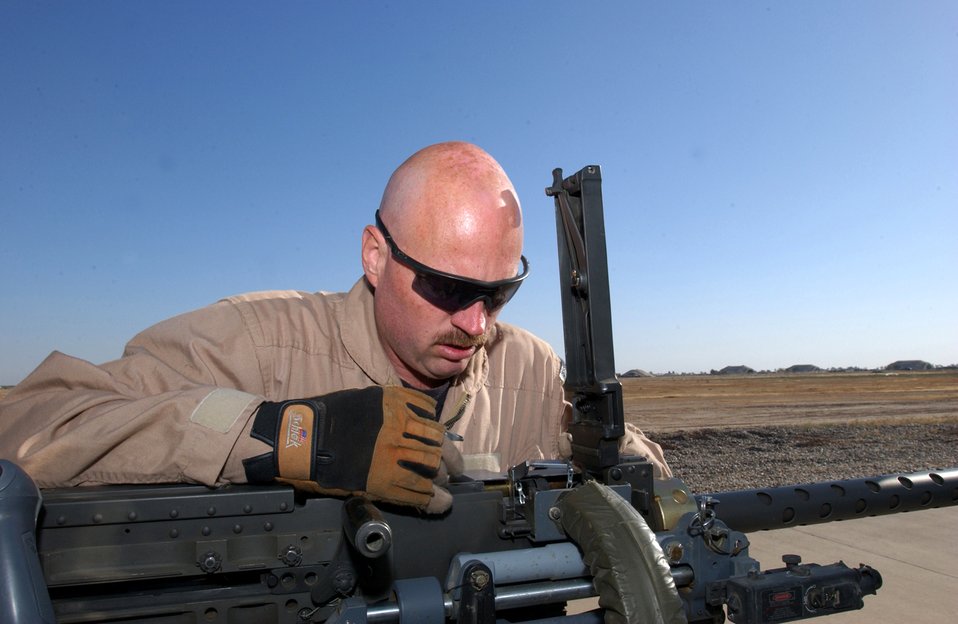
Combat rescue

BALAD AIR BASE, Iraq -- Tech. Sgt. John Buckler inspects one of two .50-caliber machine guns aboard an HH-60 Pave Hawk helicopter. Sergeant Buckler is a flight engineer with 64th Expeditionary Rescue Squadron here, and he is deployed from the 41st Rescue Squadron at Moody Air Force Base, Ga.